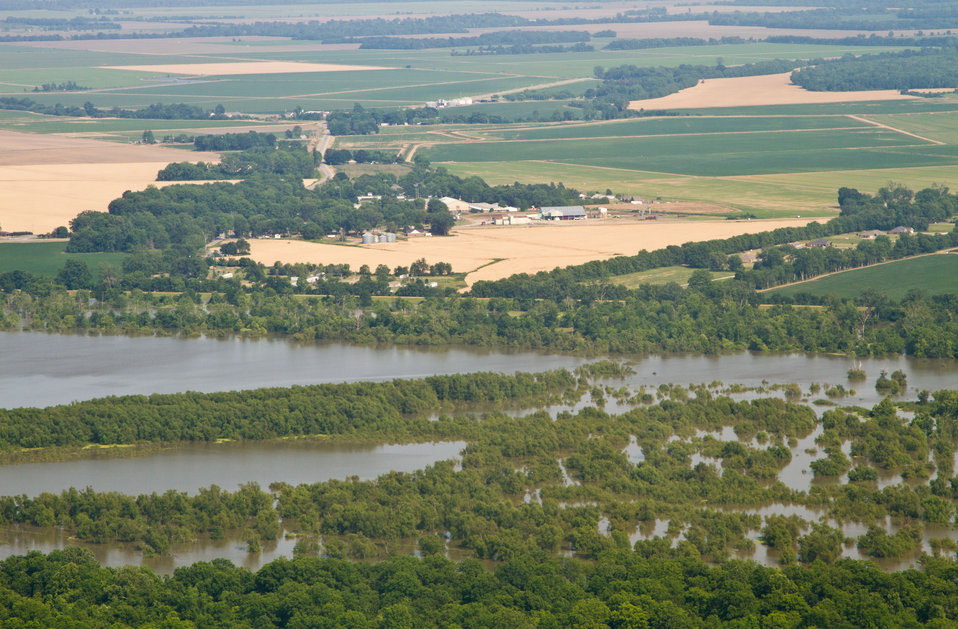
Aerial view of Mississippi River flood of farms, wilderness, and populated areas, on Thursday, May 19, 2011. from the MS side. Aerial platform was a UH-60 Blackhawk commanded by Col. Kennedy and his flight crew from the Army Aviation Support Facility #1 at Hawkins Field in Jackson, MS.